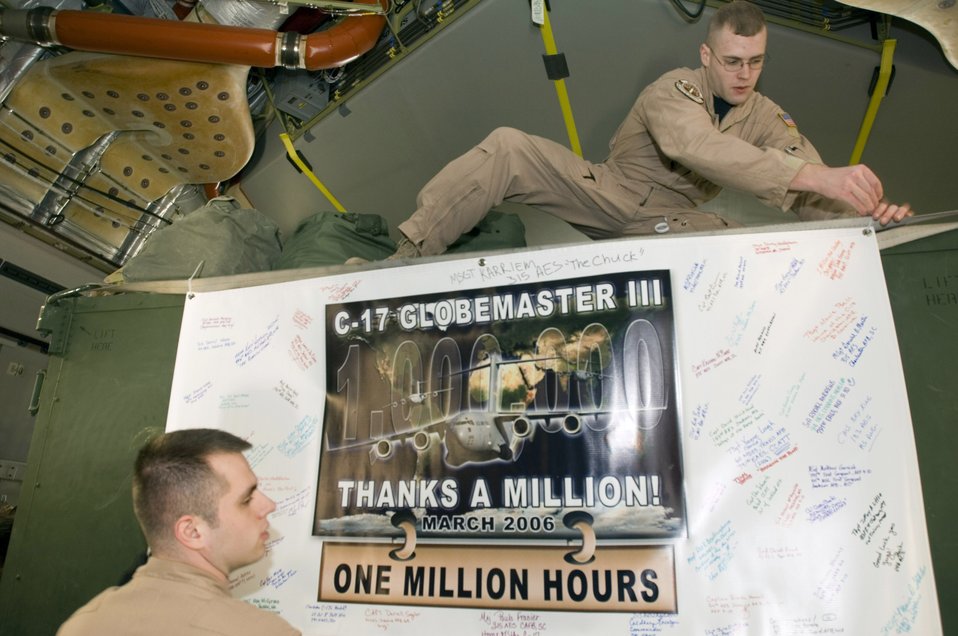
C-17 surpasses its 1 millionth flying hour

Senior Airmen Christian Adams, above, and Daniel Wood hang a sign inside a C-17 Globemaster III at Ramstein Air Base, Germany, on Sunday, March 19, 2006. On its return flight, it met the 1 millionth hour of flight time.